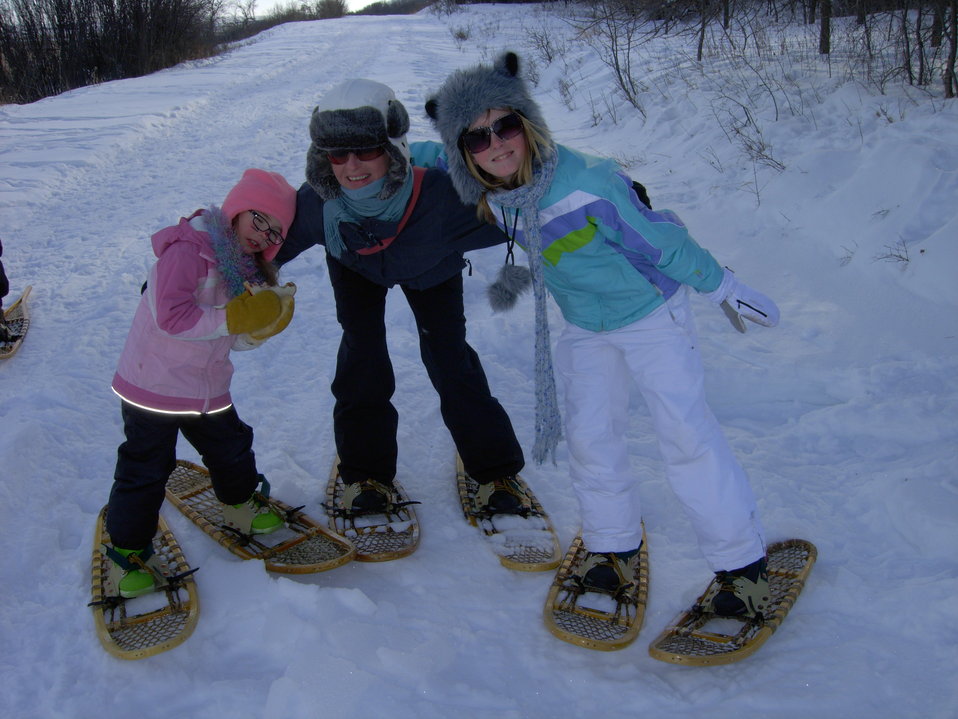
Snowshoeing in Des Lacs NWR

These gals know how to have fun while snowshoeing at Des Lacs National Wildlife Refuge.